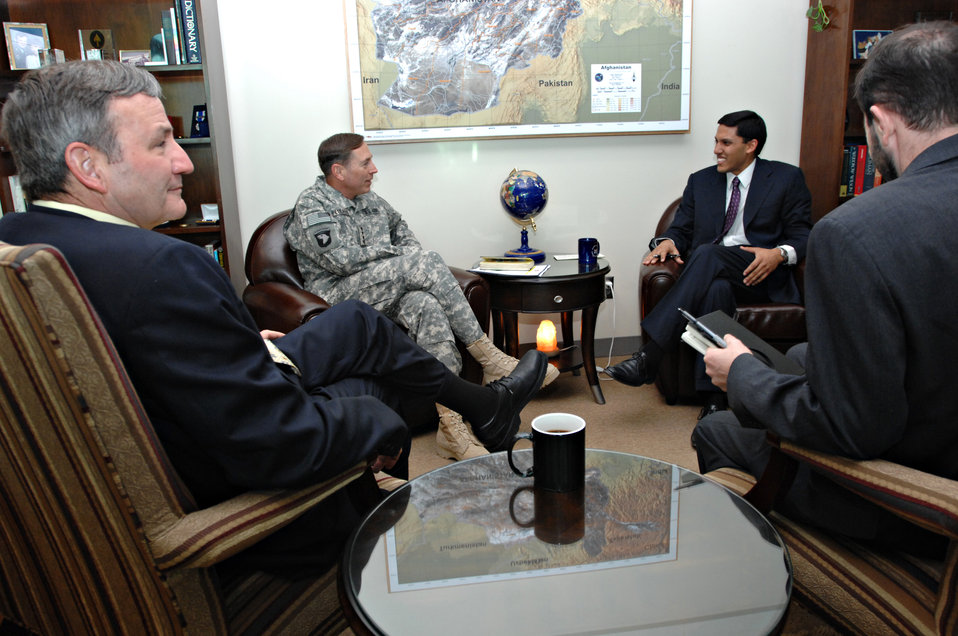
110208sv Shah017

U.S. Ambassador Karl W. Eikenberry meets with ISAF (International Security Assistance Force) Commander General David Petraeus and Dr. Rajiv Shah, Administrator of the United States Agency for International Development (USAID) at the U.S. Embassy in Kabul, Afghanistan on Tuesday, February 8, 2011. (S.K. Vemmer/Department of State)